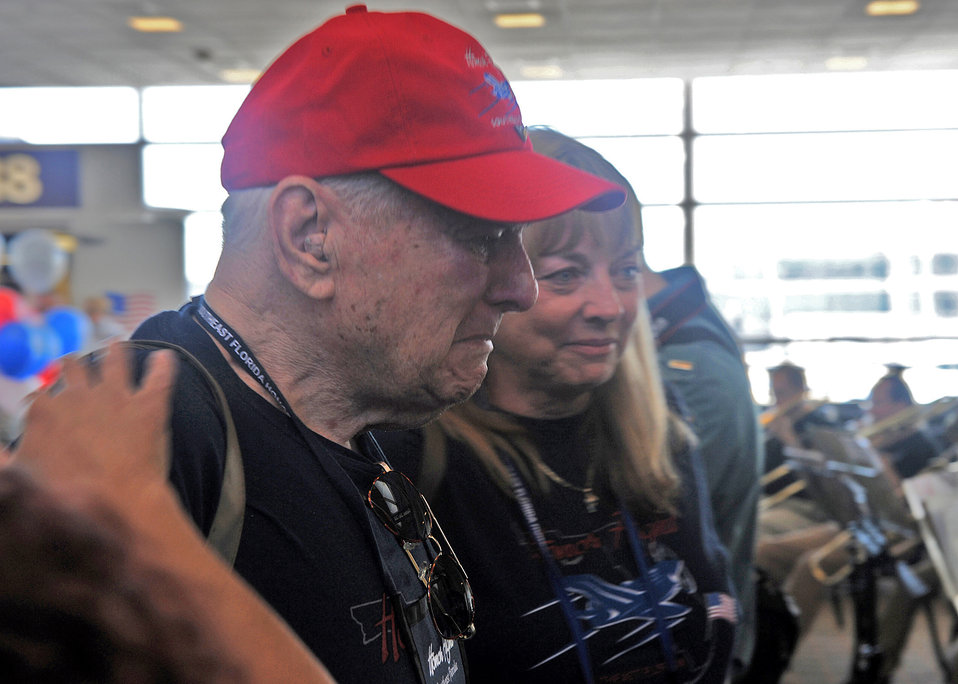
Honoring WWII veterans

Harvey Bennett, a World War II veteran, is overcome by emotions during the Honor Flight reception at the Ronald Reagan National Airport on May 12. Bennett was of 169 veterans who visited the nation’s capitol. The Honor Flight Network is a nonprofit organization created solely to honor America’s veterans for all their sacrifices.